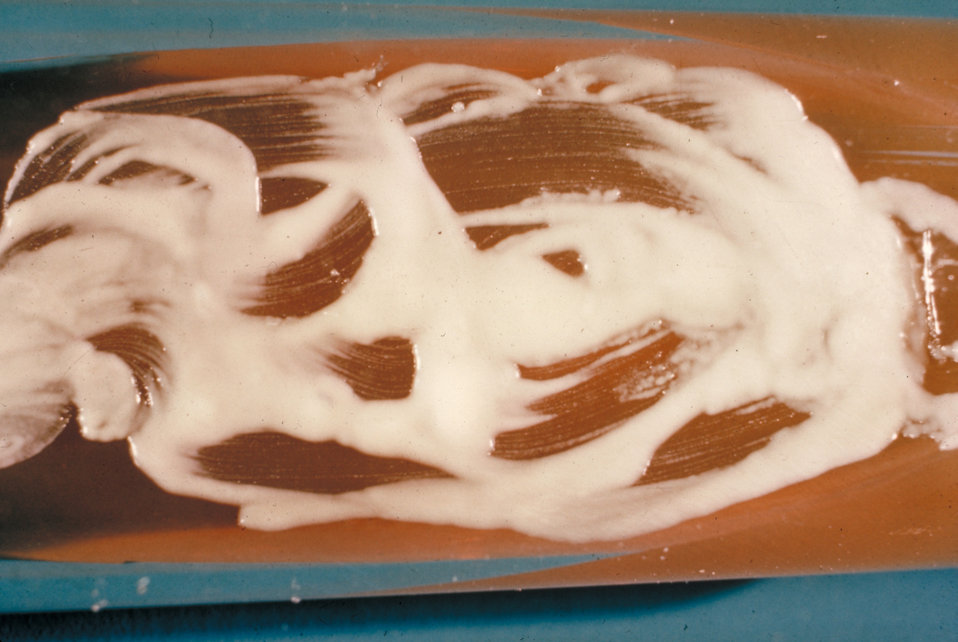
Shown is a slant culture of Sporothrix schenckii during its yeast phase.